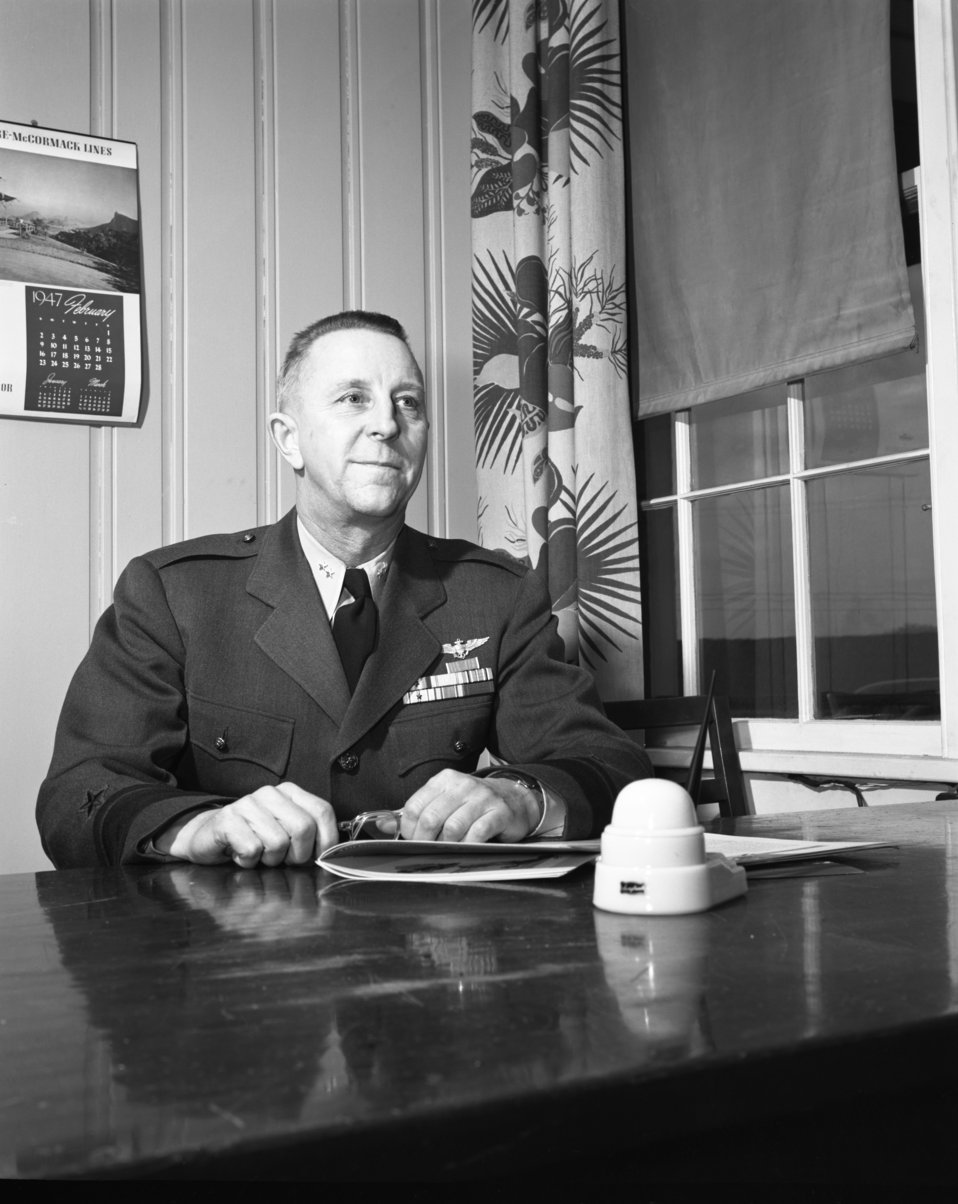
Rear admiral T.C. Lonnquest Oak Ridge 1947

3295-1 DOE photo Ed Westcott 2-13-1947 Oak Ridge Tennessee